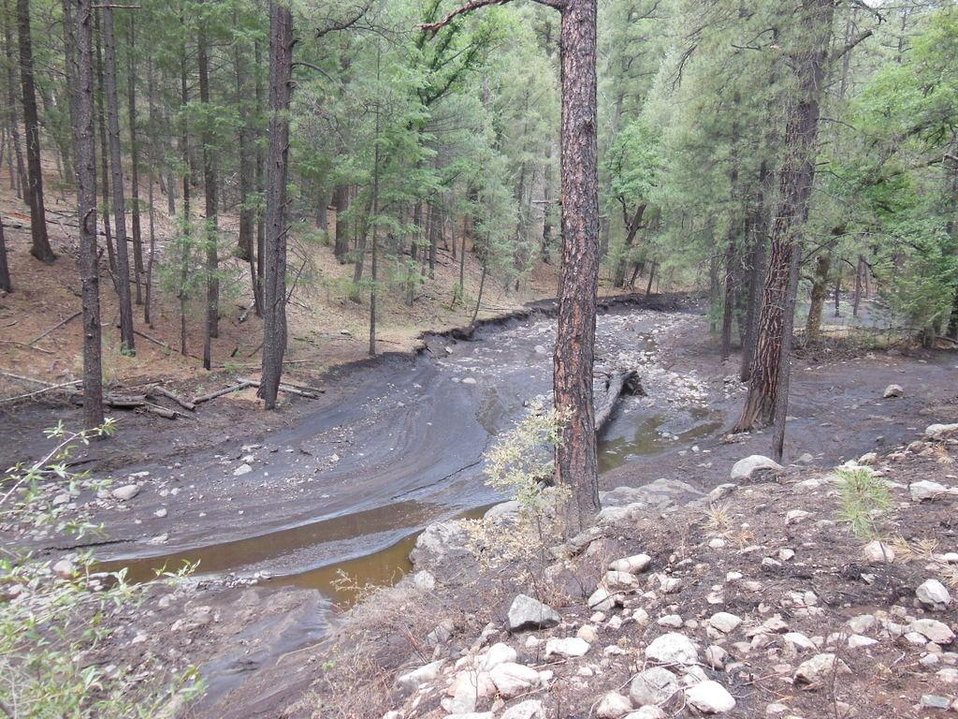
An ash flow in East Cayon area of the Silver Fire near Kingston, NM occurs from ash being washed into streams and creeks. The Silver Post Fire response has the Burned Area Emergency Response (BAER) team beginning operations to seed acres of high burn severity and to mulch additional acres. Seeding reduces effects to downstream life, property, and infrastructure by reducing erosion and runoff. Areas of high burn severity are to be seeded with a quick germinating, non-persistent annual cereal barley that would provide rapid ground cover. A small percentage of native perennial species would also be included to give the burned area a jump start in natural recovery, and provide for long-term ground cover. Mulch is the most effective treatment for controlling erosion and runoff, as it provides immediate ground cover. Mulch also assists in stabilizing soil in and around these areas.